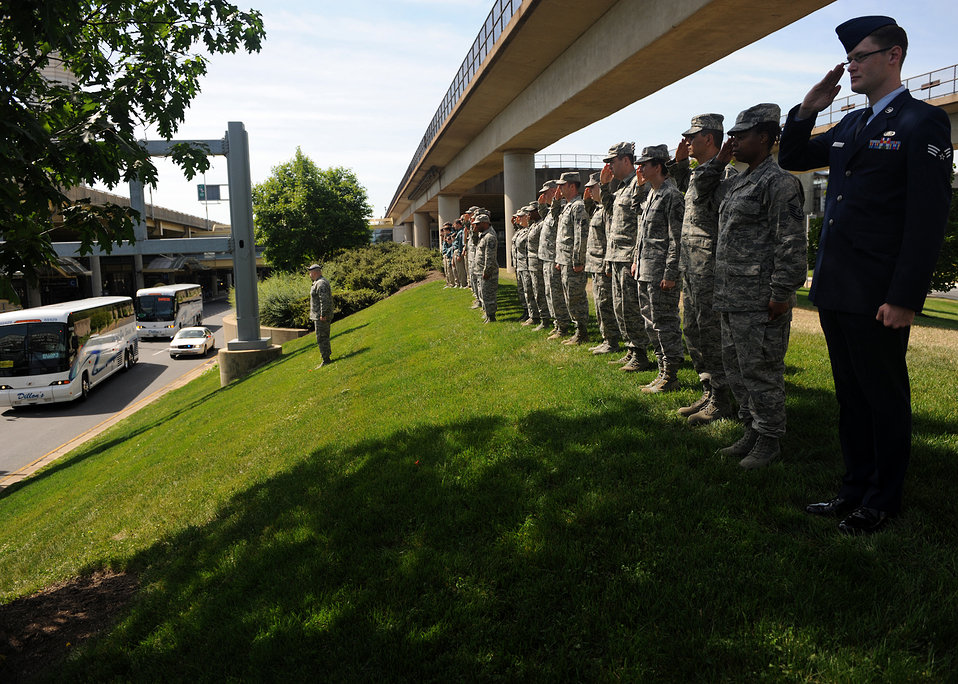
Honoring WWII veterans

Airmen salute a group of World War II veterans as they depart Ronald Reagan National Airport during their Honor Flight tour May 12. The Honor Flight Network is a nonprofit organization created solely to honor America’s veterans for all their sacrifices.